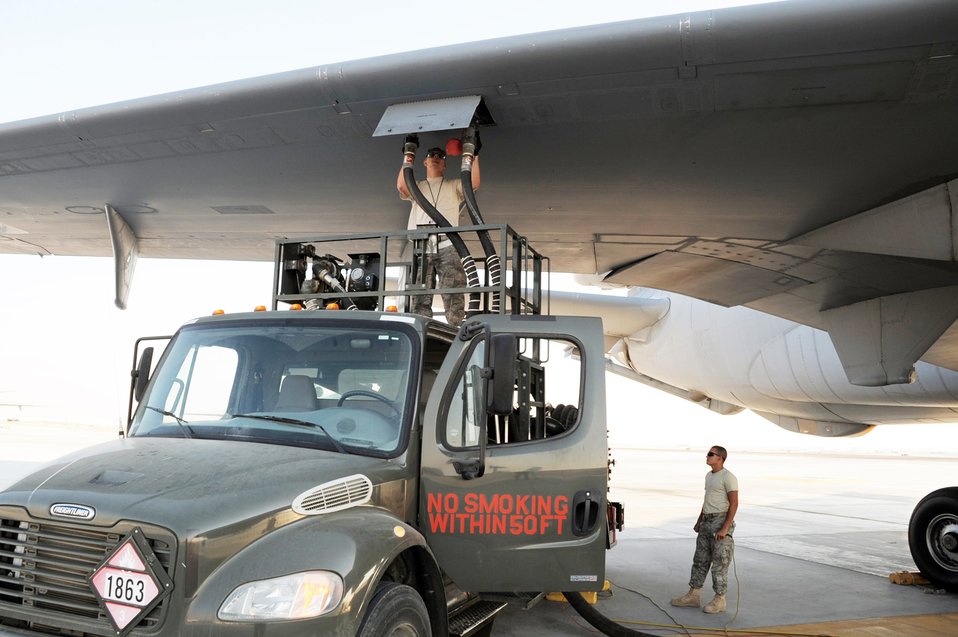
Airmen making a difference one gallon at a time

Airman 1st Class Dustin Hathcock and Airman Jose Goitia work together to refuel a KC-10 Extender during flightline operations at base in Southwest Asia Jan. 6, 2010. Airman Hathcock is a KC-10 crew chief and Airman Goitia is a 380th Expeditionary Logistics Readiness Squadron fuel management flight fuels distribution apprentice.